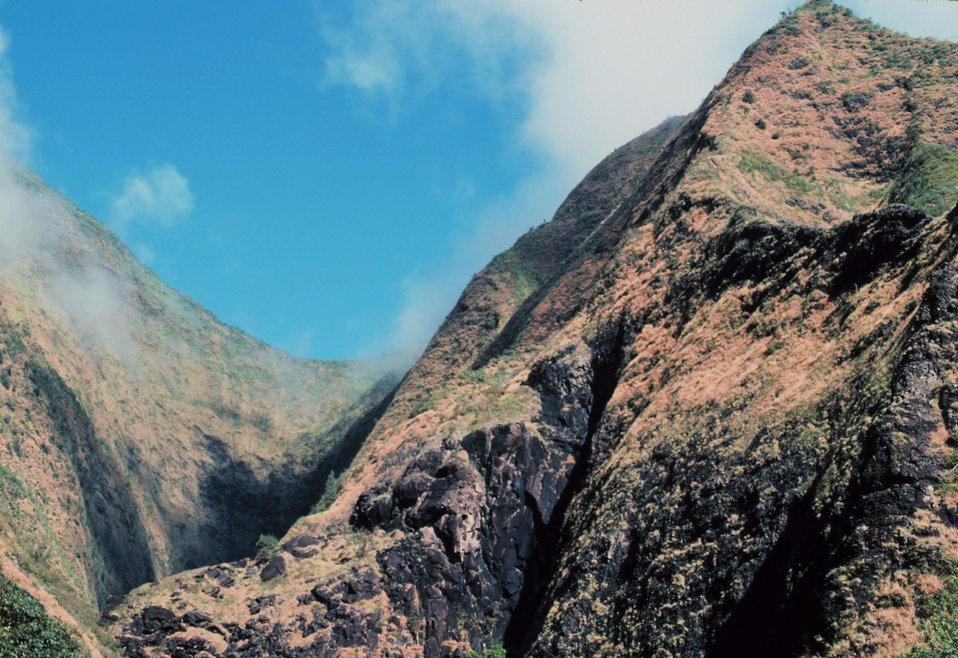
In the West Maui Mountains near the Iao Needle